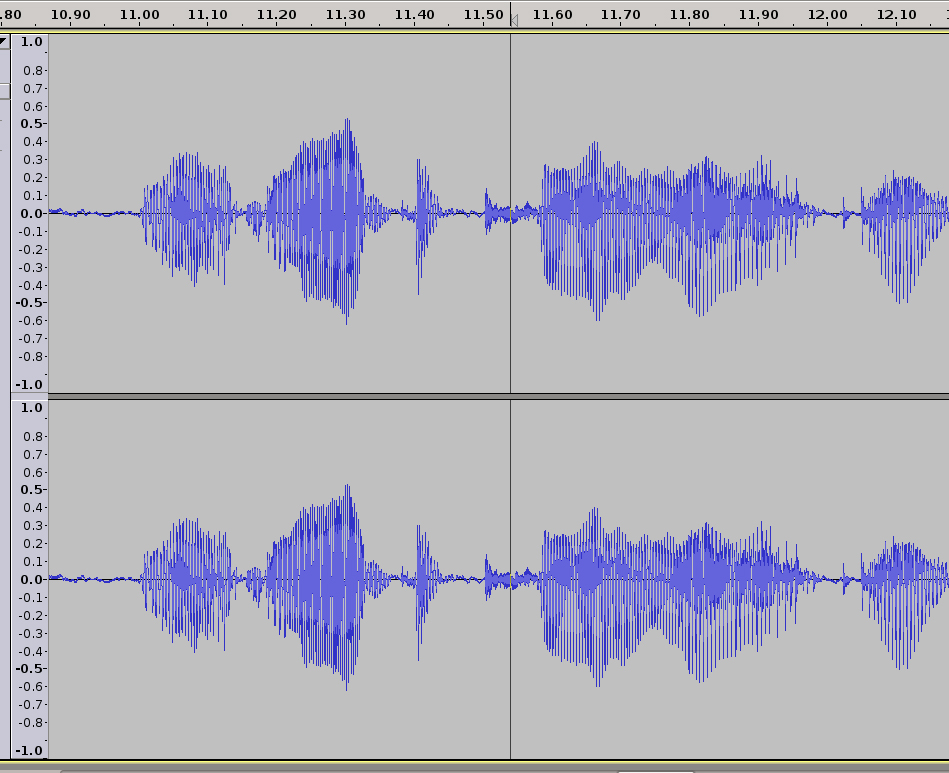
Voice Print Sample

A proposed voice supplement to the ANSI/NIST-ITL Standard could assist law enforcement to identify a person of interest by matching a voice sample (shown above) to voice data records, in a method similar to matching fingerprints.